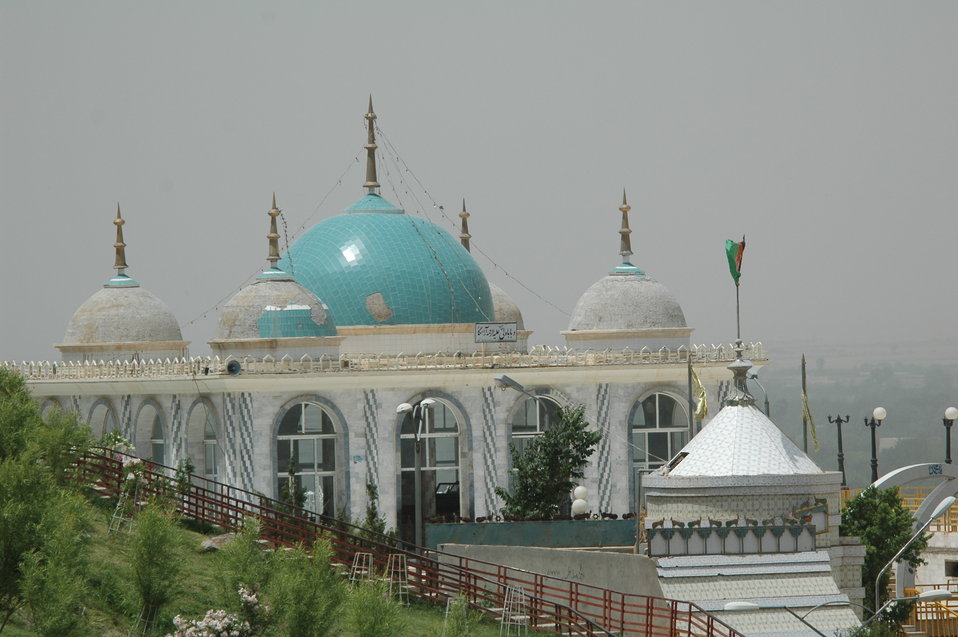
CODEL Berman